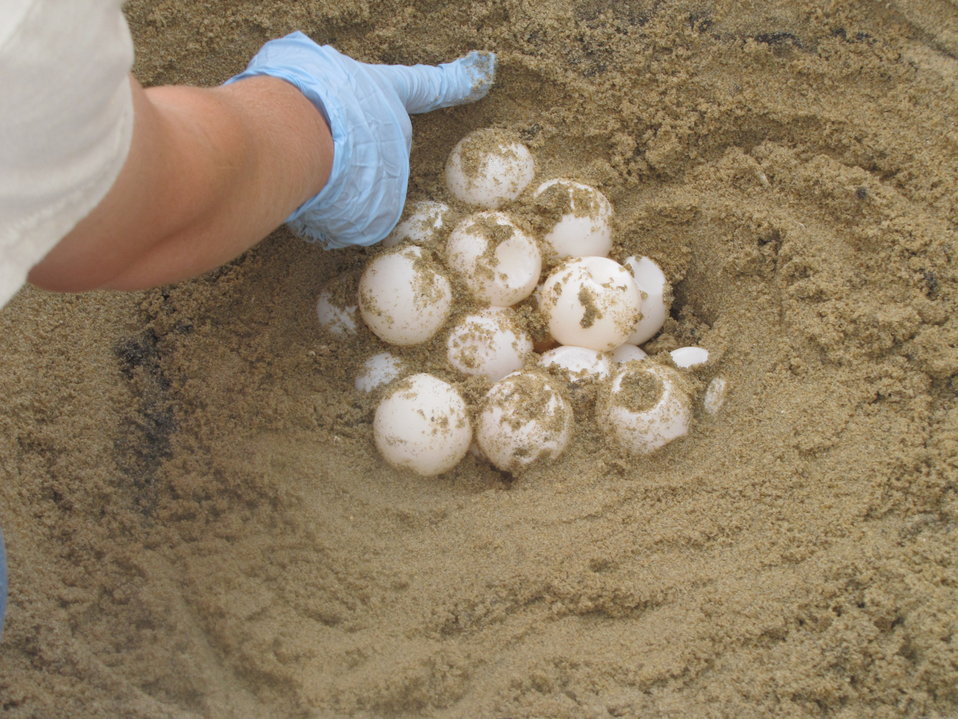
Sea turtle eggs

Credit: USFWS
Crawl 2, Nest 2